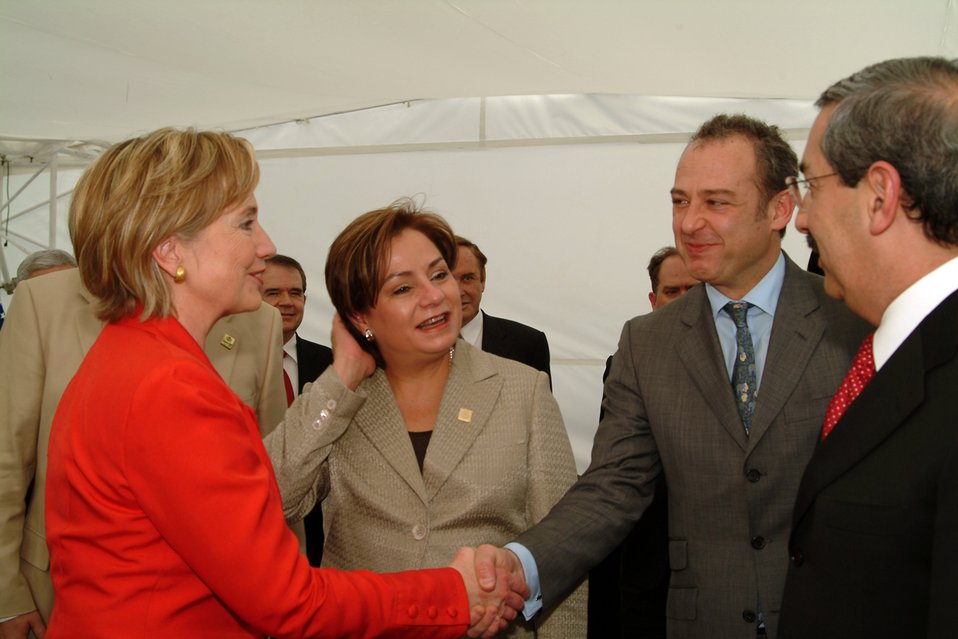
Secretary Clinton at Simeprode Power Plant

U.S. Secretary of State Hillary Rodham Clinton during a visit to the Simeprode power plant in Monterrey, Mexico March 26, 2009.